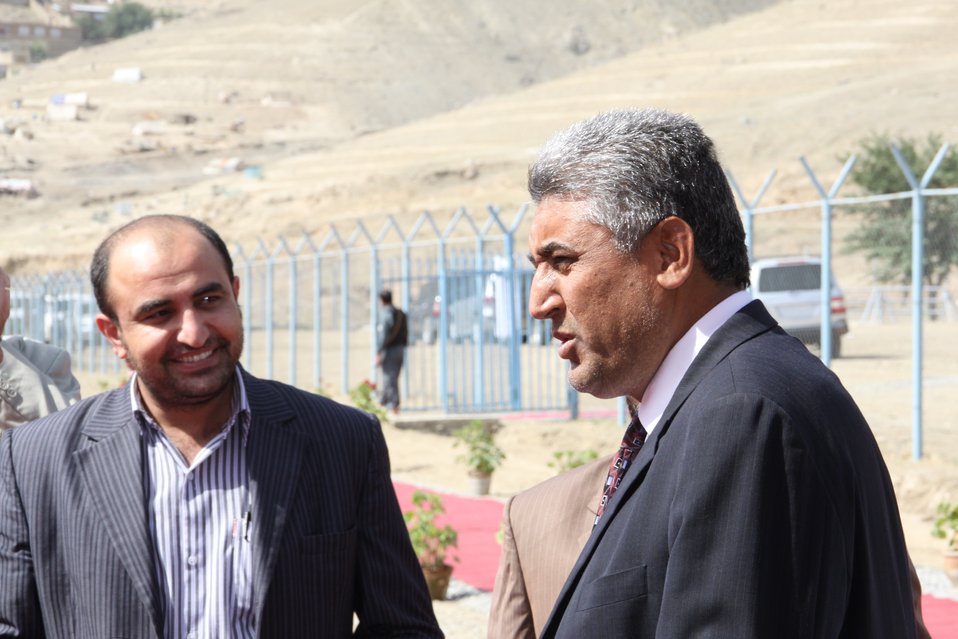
Badam Bagh Farm